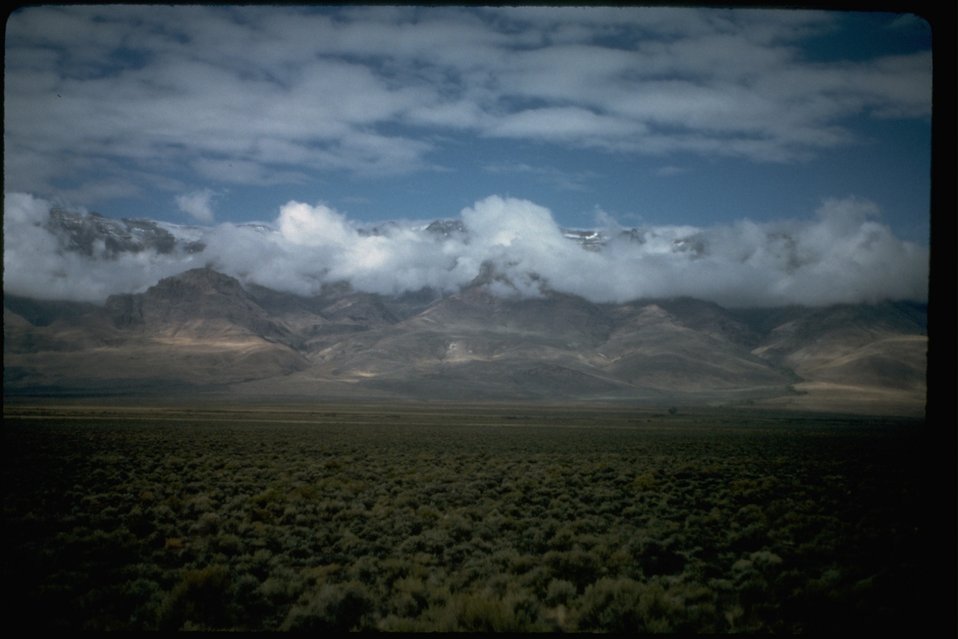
East face of the Steens Mountain. OR 2-85F